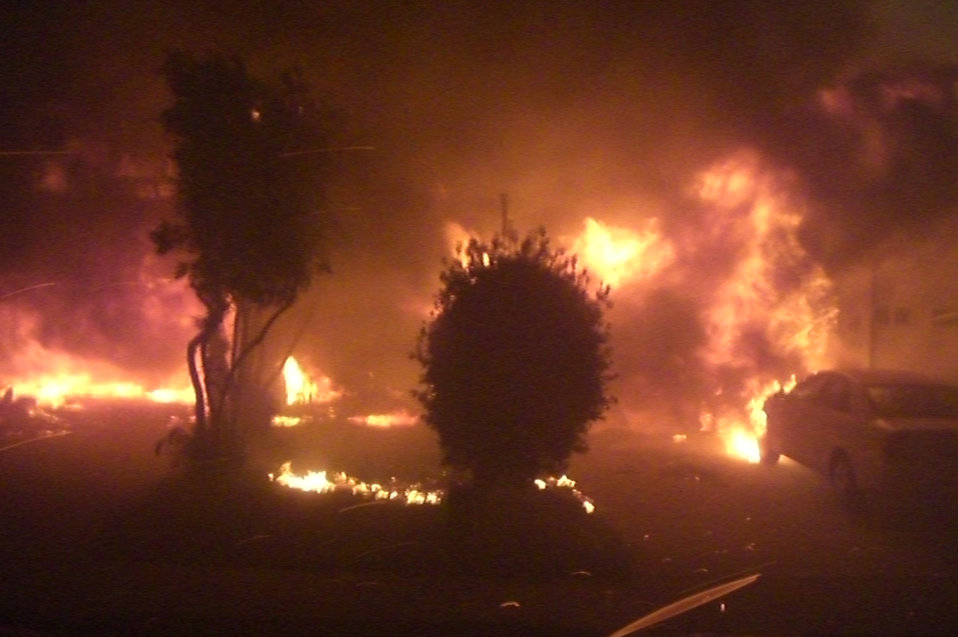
Witch Fire

The Witch fire, the largest of the fires that occurred during the 2007 California firestorm, burned 80,124 hectares and destroyed 1125 residential structures.